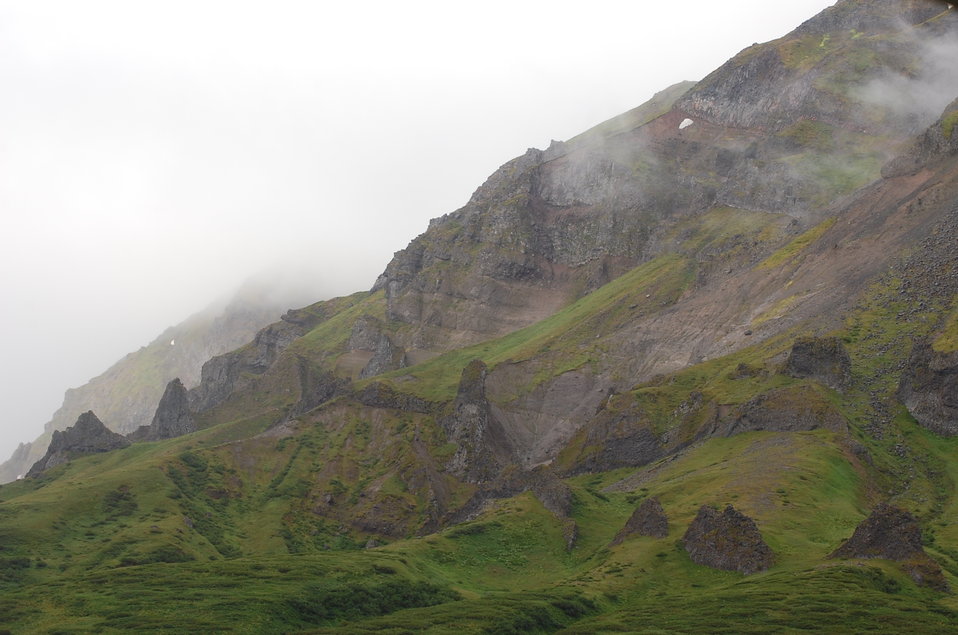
NE Unimak Landscape

Unimak Island, Alaska Maritime National Wildlife Refuge